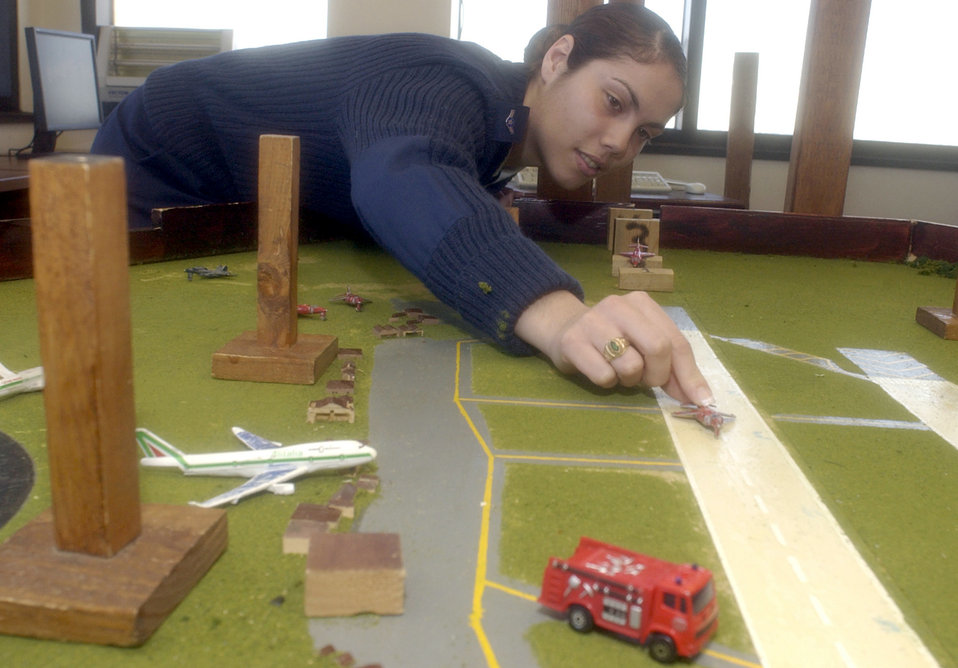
Board game over

SHAW AIR FORCE BASE, S.C. -- Airman Zenaida Nazario demonstrates old-fashioned air traffic control training methods using a static board. A new $500,000 Air Traffic Control Simulation System at the base's air traffic control tower is replacing this static board. The new system will allow controllers to receive realistic training in an electronic environment that closely resembles the base and its aircraft. Airman Nazario is an air traffic controller assigned to the 20th Operations Support Squadron here.